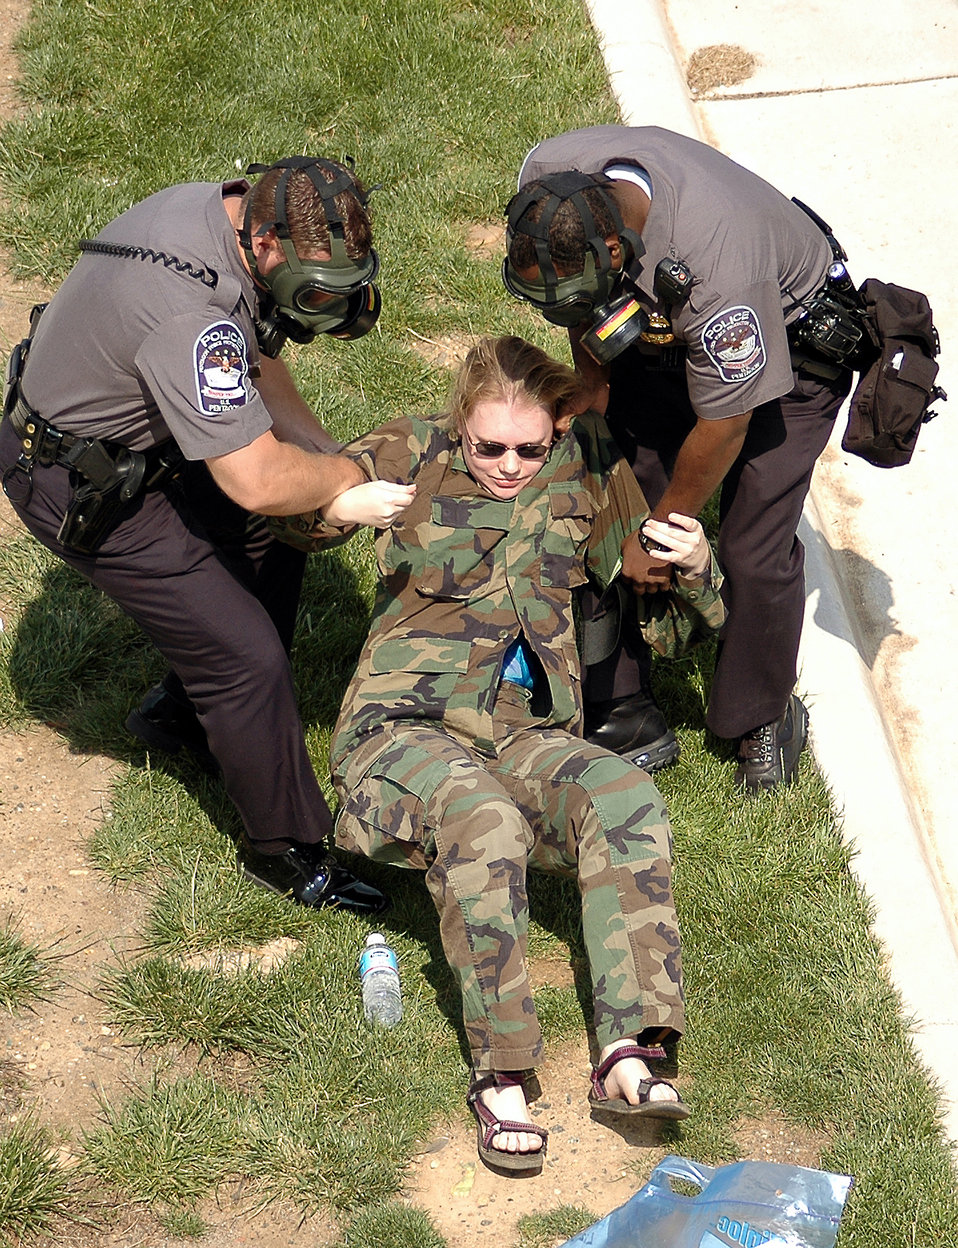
National Capitol Region first responders train for Pentagon disaster

Two members of the Pentagon Force Protection Agency help a